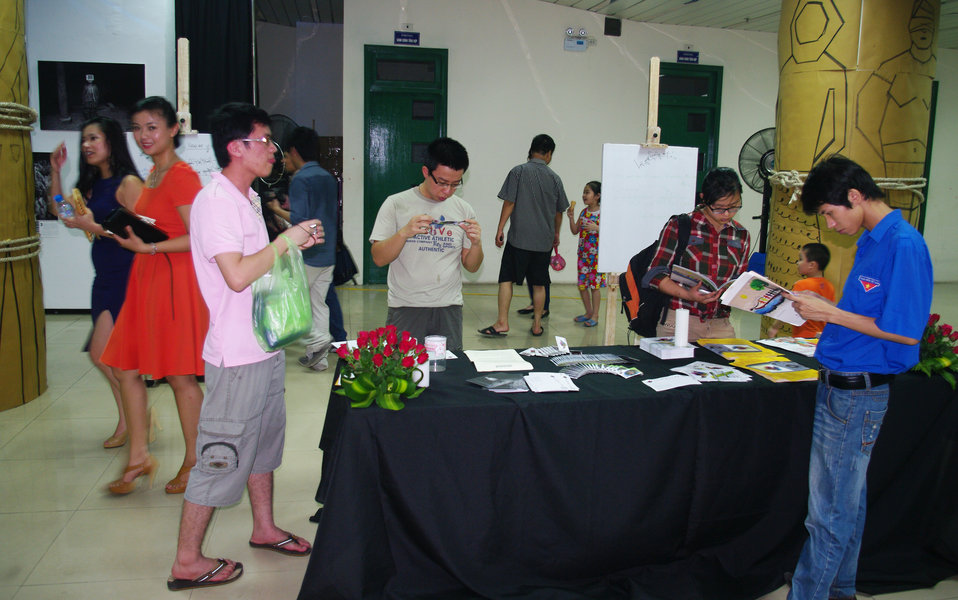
MTV EXIT opens Youth Forum in Hanoi